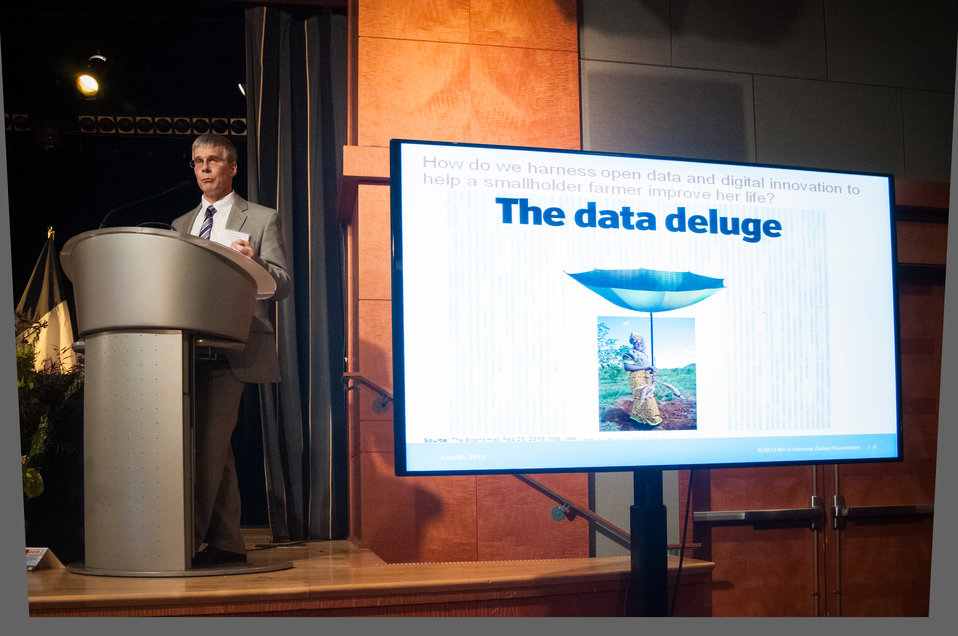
Bill and Melinda Gates Foundation Digital Design for Agriculture Deputy Director David Bergvinson discussed, “Open data: Challenges for the Future-Leveraging Open Data to Accelerate the Development and Delivery of Farmer-Preferred Products and Services in Africa at the G-8 International Conference on Open Data for Agriculture in Washington, D.C. on Tuesday, Apr. 30, 2013. The conference launched a new 'virtual community' of Food, Agriculture, and Rural data on Data.gov-the U.S. Government's data sharing website-to catalogue America's publicly available agricultural data and increase the ability of the public to find, download, and use datasets that are generated and held by the Federal Government. The data community features a collection of more than 300 newly cataloged datasets, databases, and raw data sources related to food, agriculture, and rural issues from agencies across the U.S. Government. In addition to the data catalog, the virtual community shares a number of applications, maps and tools designed to help farmers, scientists and policymakers improve global food security and nutrition.